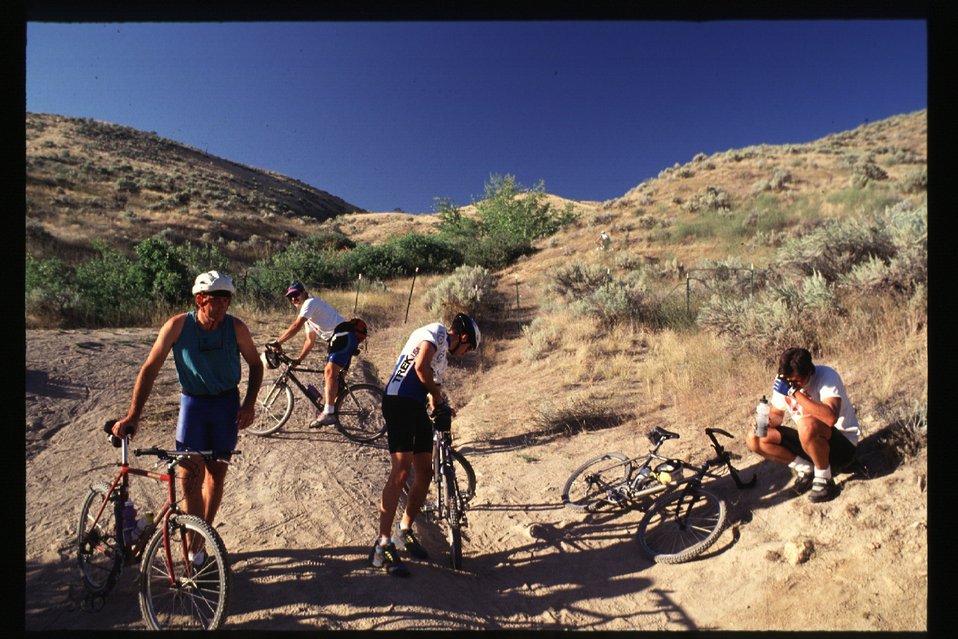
Recreation Scenic Biker Shoshone Field Office USRD Upper Snake River District